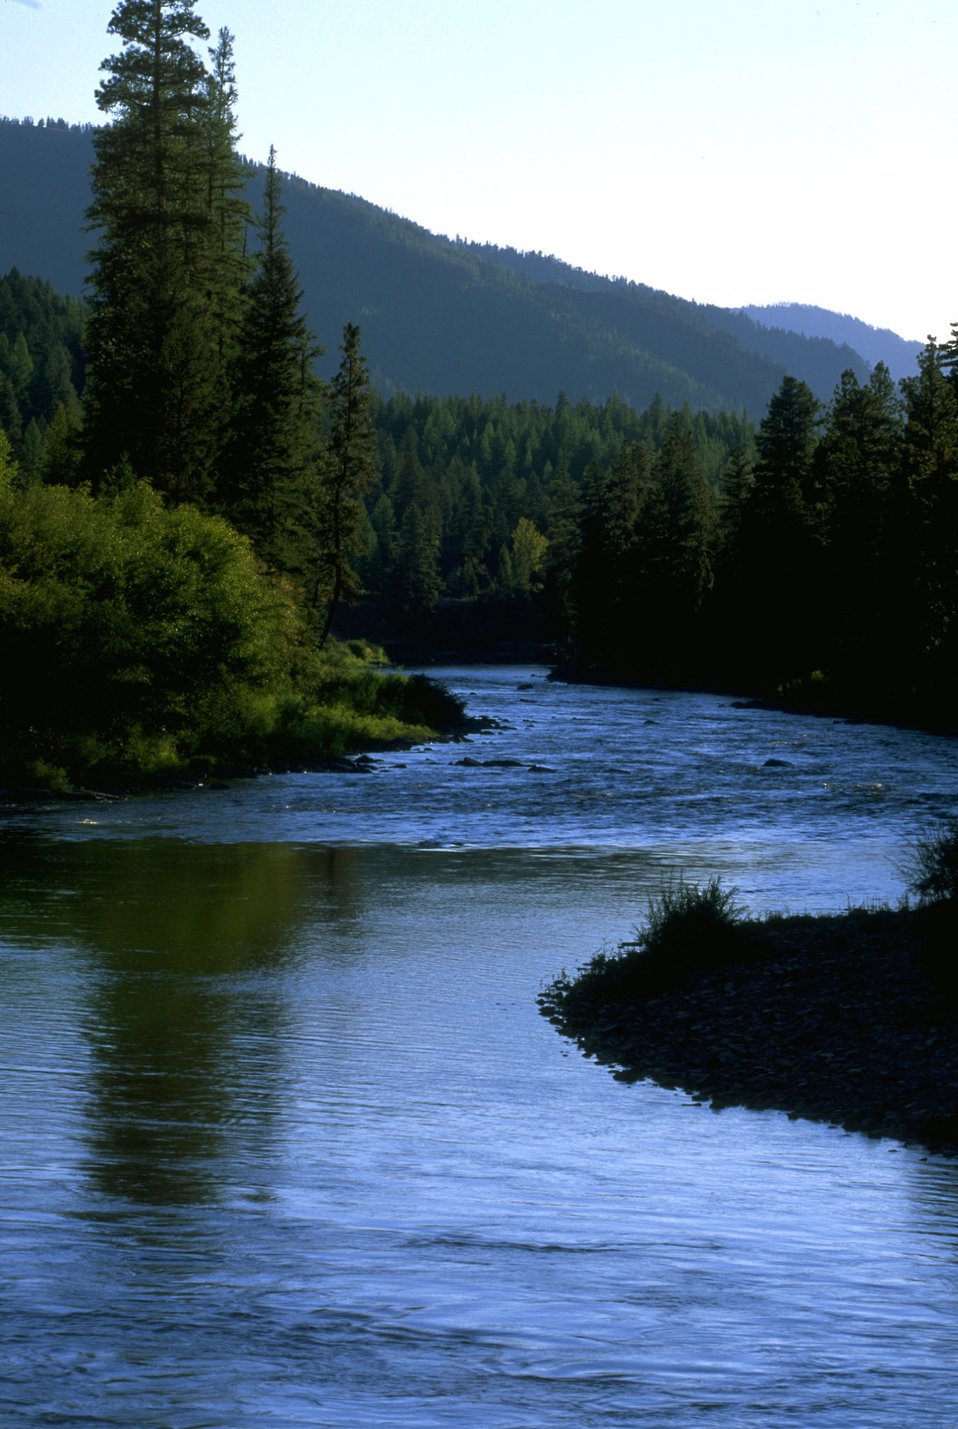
Early morning on the Blackfoot River VERTICAL